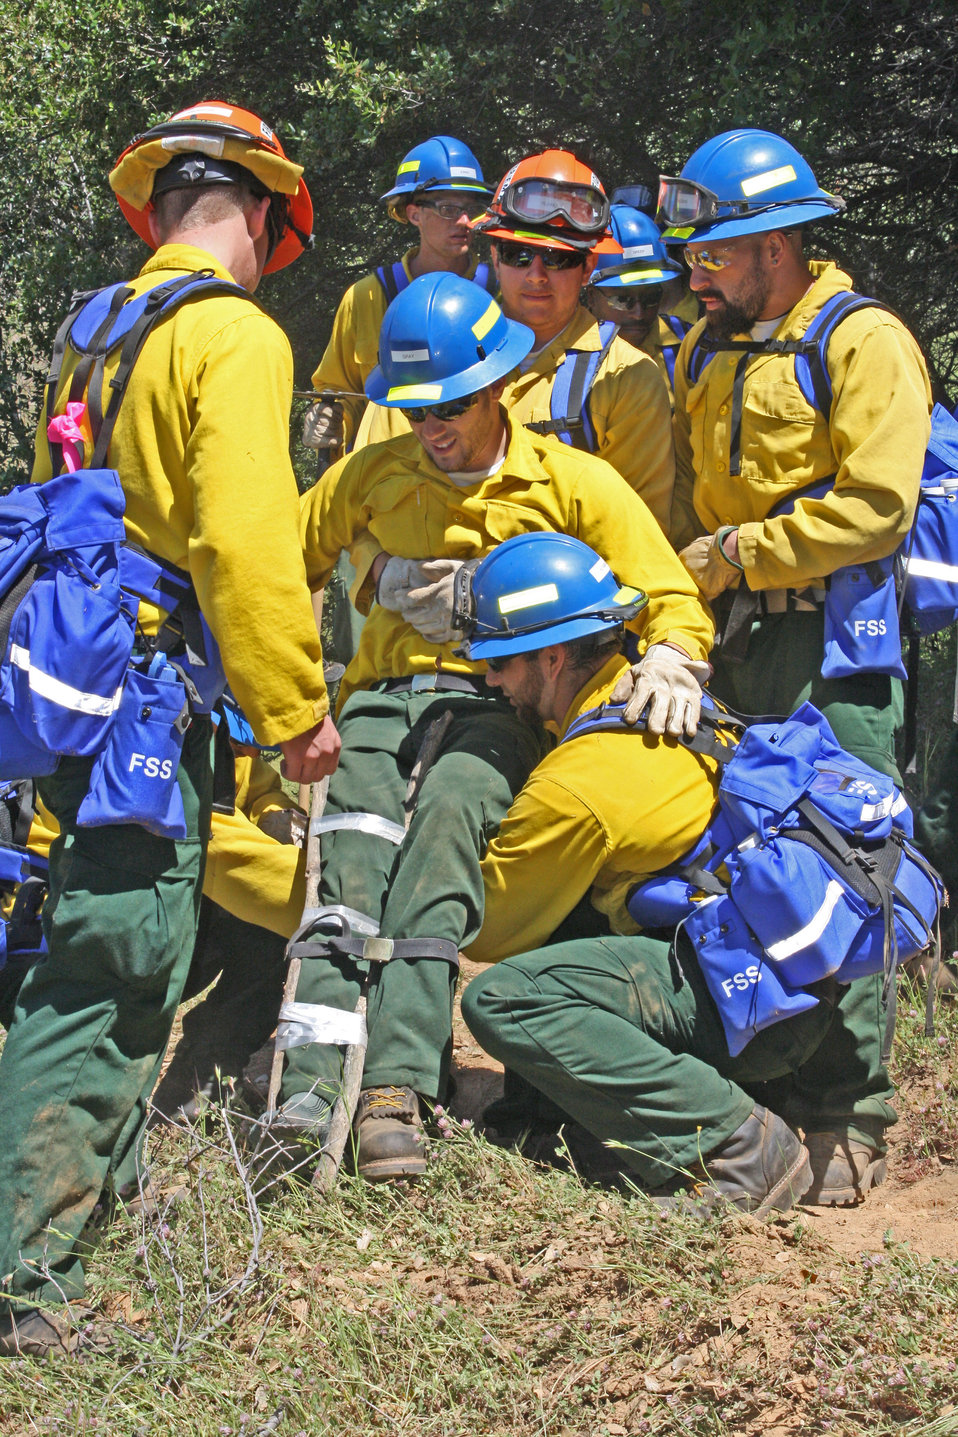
Vets1-a

Firefighter trainees practice rescuing an injured firefighter during the Forest Service and California Conservation Corps joint training session in a National Forest in California on Apr. 18, 2013. The U.S. Forest Service has partnered with the California Conservation Corps to provide firefighter training for military veterans and to date 100 military veterans have been trained as firefighters.